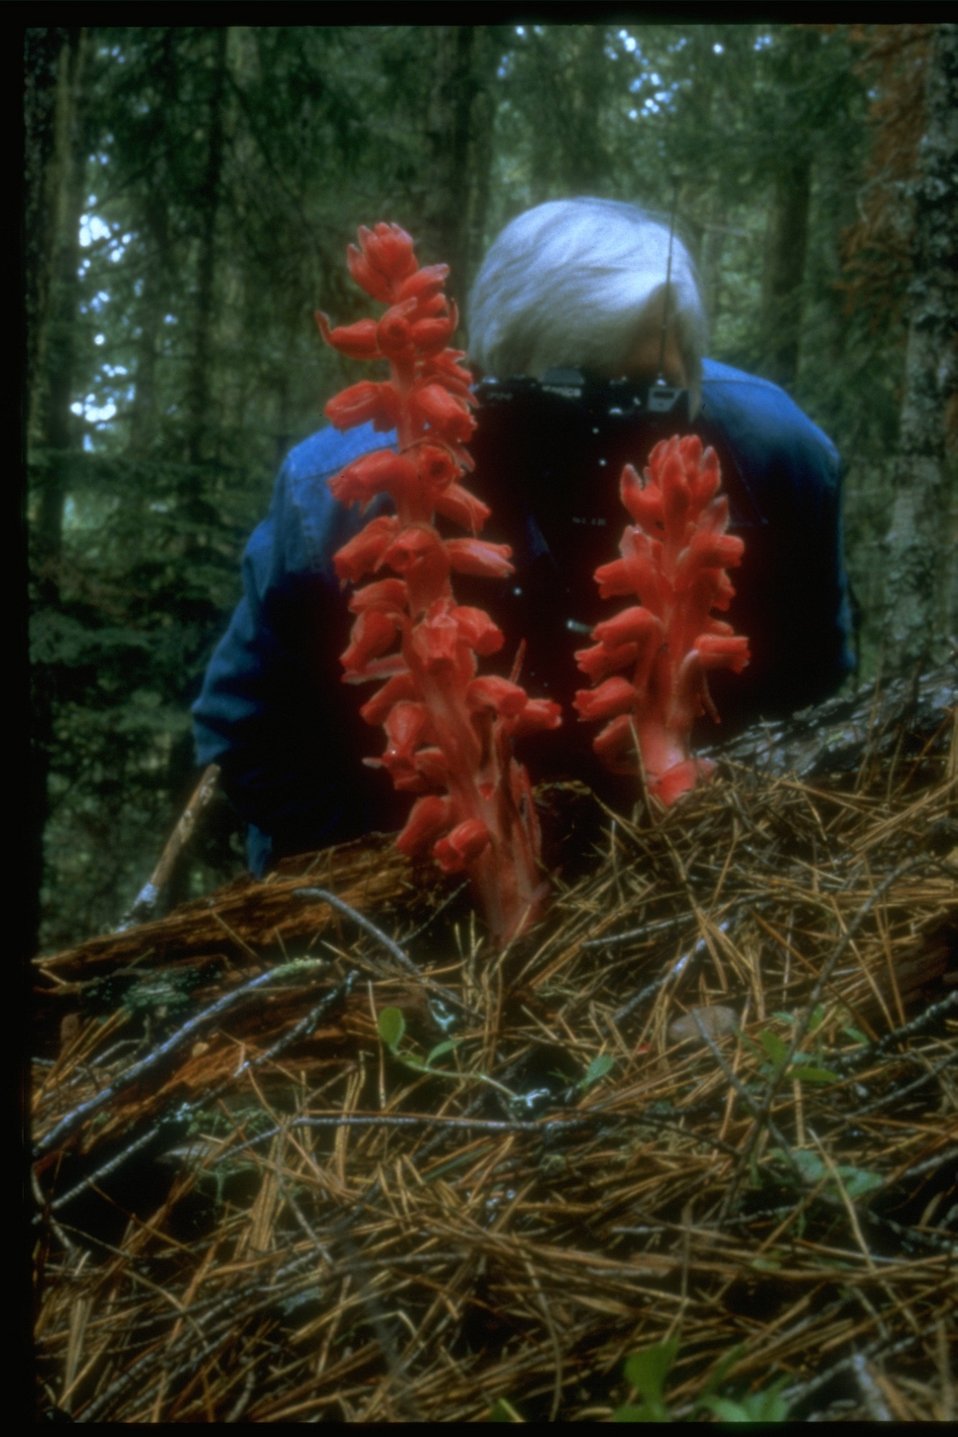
Snow plant, a bright red saprophytic herb from the family Pyrolaceae, and photographer.